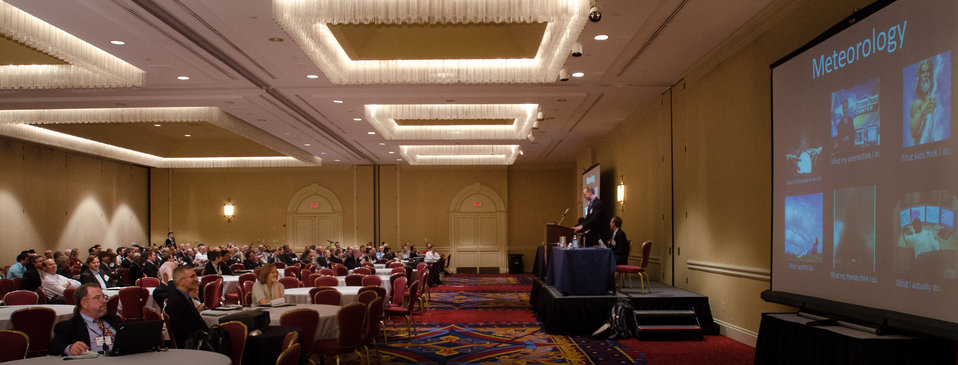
The U.S. Department of Agriculture (USDA) Office of the Chief Economist (OCE),Agricultural Meteorologist Eric Luebehusen, presented the 2012 Weather Review , during the 2013 Agricultural Outlook Forum was held at the Crystal Gateway Marriott Hotel in Arlington, VA on Friday, Feb. 22, 2013. The breakout session is generally focused on the Weather Outlook for 2013. The presentation is available at www.usda.gov/oce/forum/presentations/Rippey2.ppt.